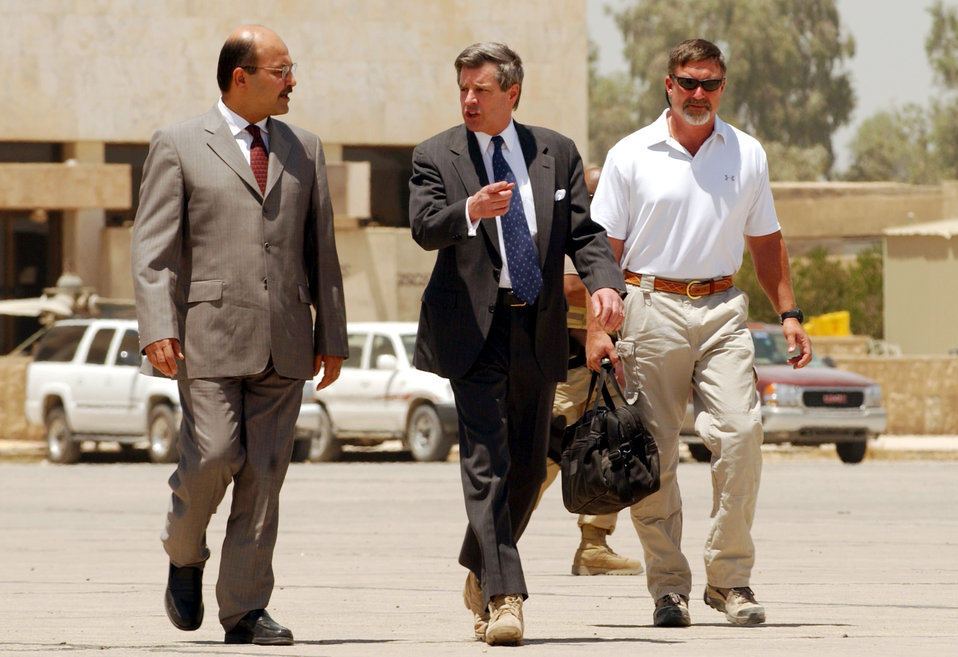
U.S. occupation officially ends

BAGHDAD, Iraq -- L. Paul Bremer III (center) leaves the